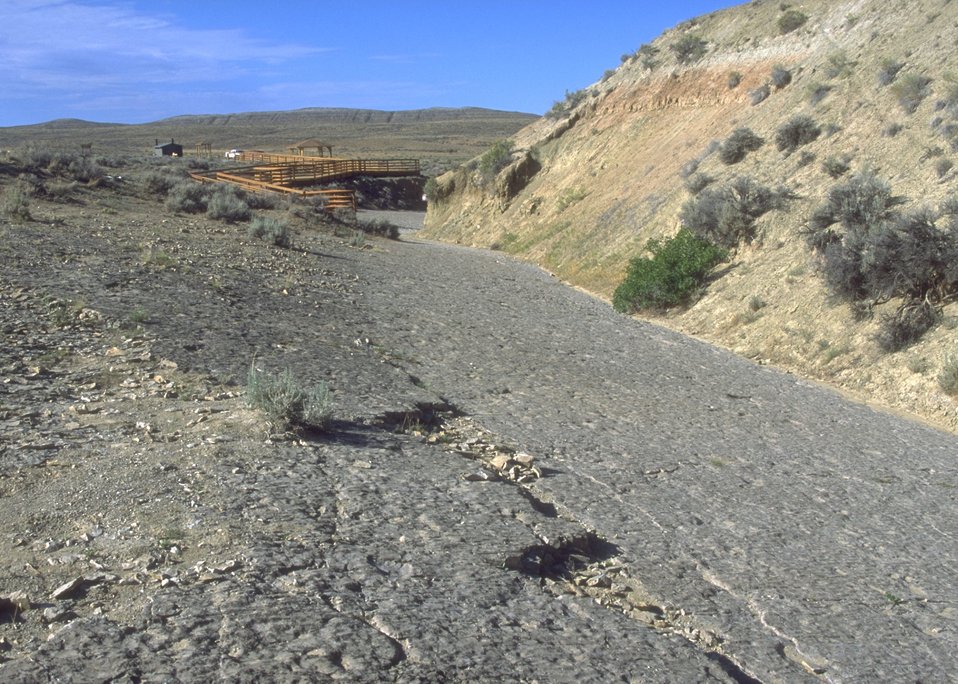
View of tracksite at Red Gulch Dinosaur Tracksite along Red Gulch/Alkali Back Country Byway, Worland.